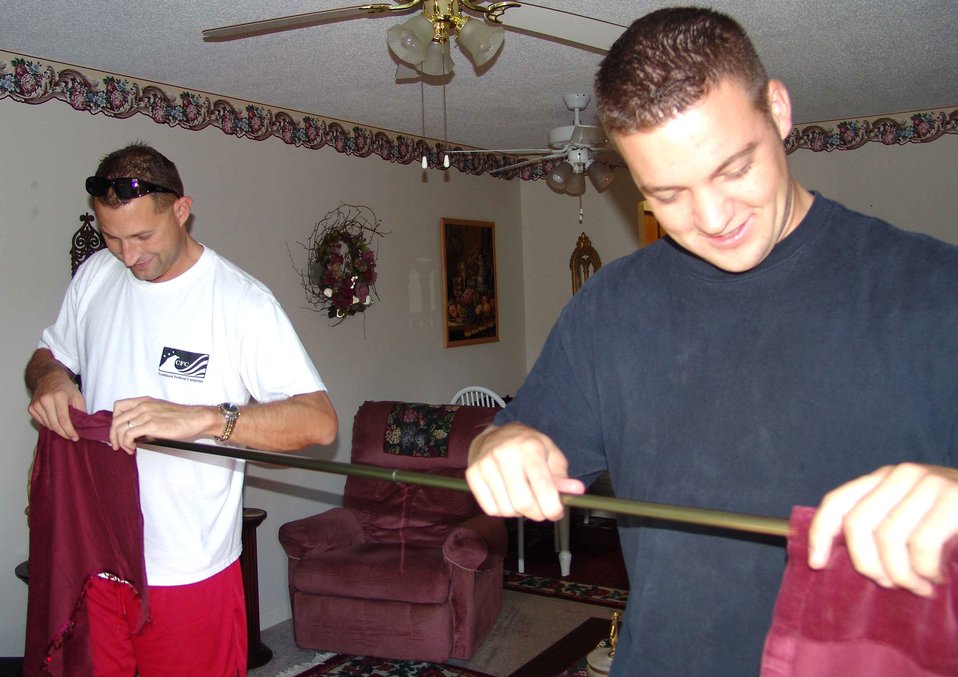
Airmen help enlisted village

SHALIMAR, Fla. (AFPN) -- First Lt. Don Gray (left) and Senior Airman Paul Waldrep hang curtains in Jackie Robertson's home at the Bob Hope Village here, during Make A Difference Day. Lieutenant Gray is a 46th Maintenance Group quality assurance officer in charge, and Airman Waldrep is a 96th Civil Engineer Squadron firefighter.